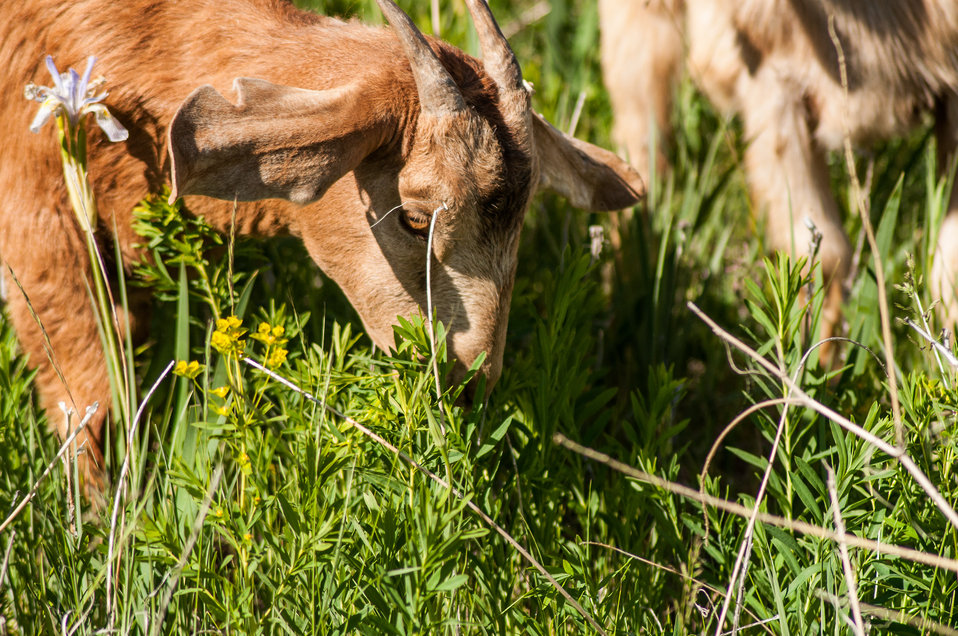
Goat landing on Bozeman Fish Technology Center

On June 8 at 5:00 p.m., 409 yearling domestic goats were off-loaded on the Bozeman Fish Technology Center (BFTC) campus. Thus begins a 3-4 year project of monitored targeted grazing and applications of friendly insects to control noxious weeds and manage brush overgrowth on property of the U.S. Fish and Wildlife Service BFTC.

Purposes of this effort are to reduce the presence of undesirable vegetation, promote restoration of native plants, and assist with fire protection by reducing burnable plant biomass.

The cooperative venture involves the U.S. Fish and Wildlife Service, Montana Outdoor Science School, Friends of the Bozeman Fish Technology Center, Gallatin Valley Land Trust, U.S. Forest Service, and Prescriptive Livestock Services. Integrated Weed Control is supplying the insects as an in-kind contribution to the project, and has applied insects on the BFTC’s 'hot spots' in previous years.